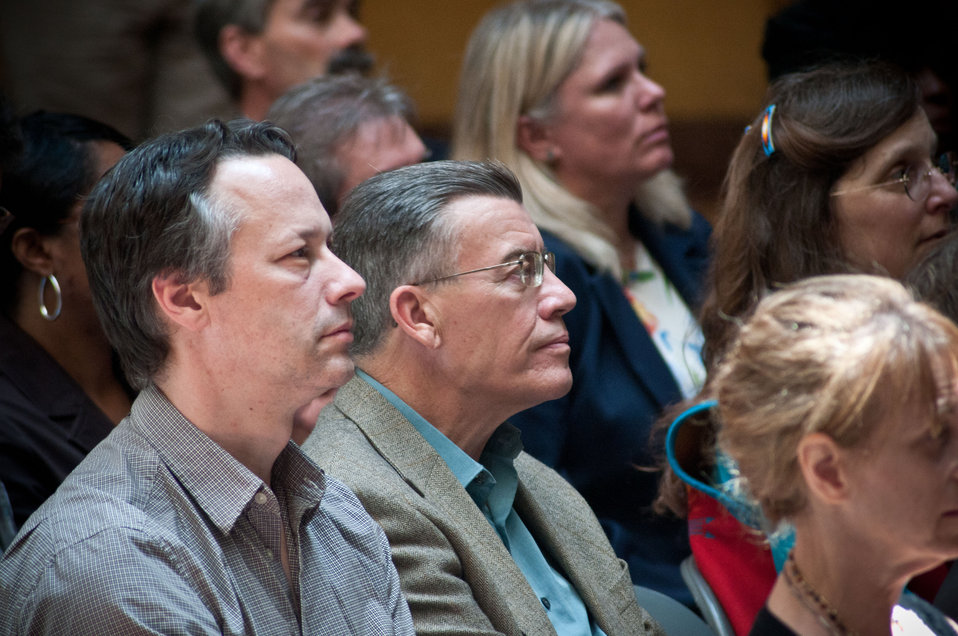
Guests at the International Year of Forests (IYOF) celebration on Friday, June 3, 2011 on the Patio of the Whitten Building, U.S.Department of Agriculture in Washington, DC.